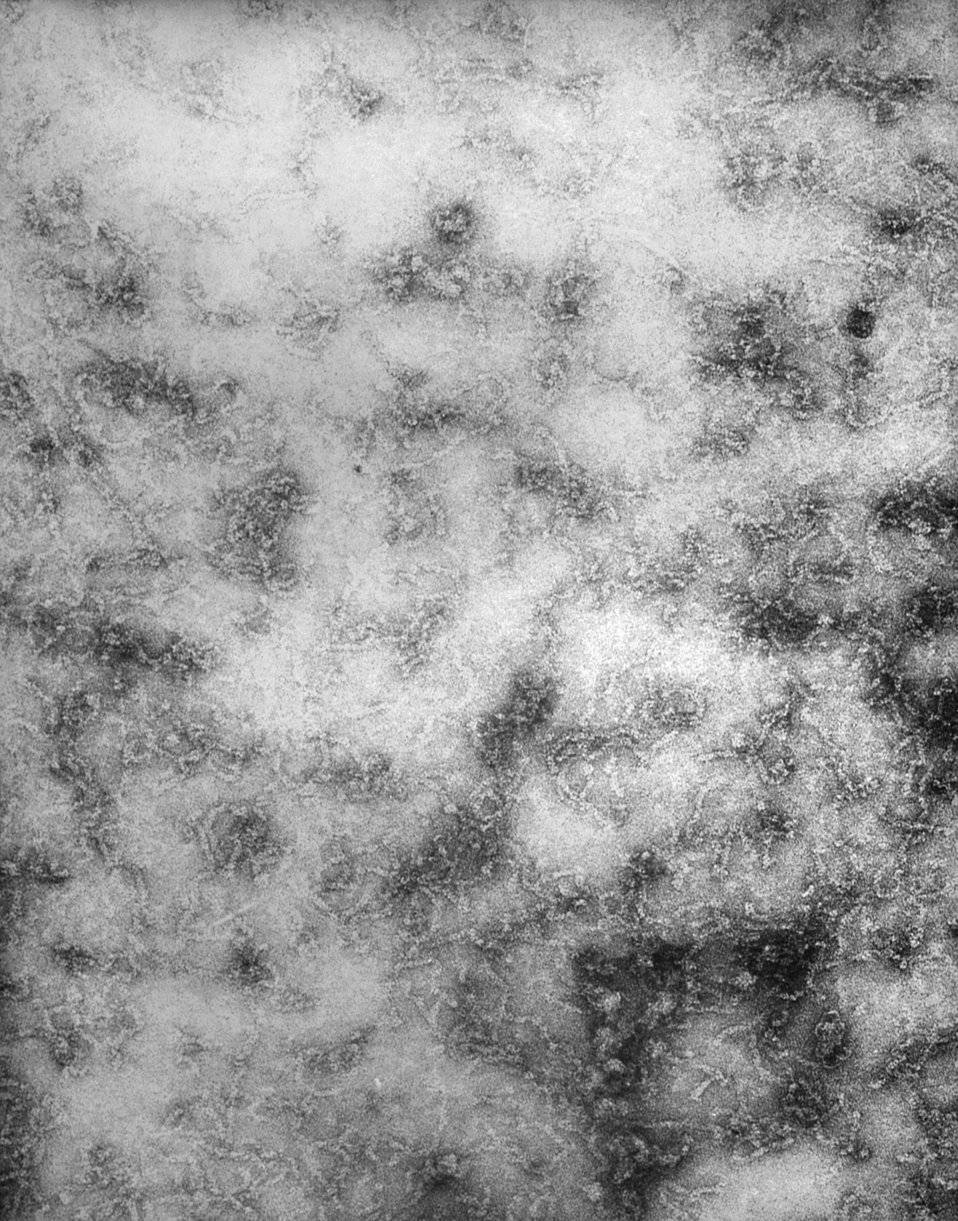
This negatively-stained transmission electron micrograph (TEM) revealed the presence of La Crosse (LAC) encephalitis virus ribonucleoprotein particles (RNP). LAC virus is a member of the Bunyaviridae virus family, California serogroup. This is an arbovorus, which means that transmission occurs through the bite of an infected arthropod, which in this case, is the treehole mosquito, Aedes triseriatus. LAC can also be transmitted through the bite of infected vertebrates including chipmunks and squirrels.